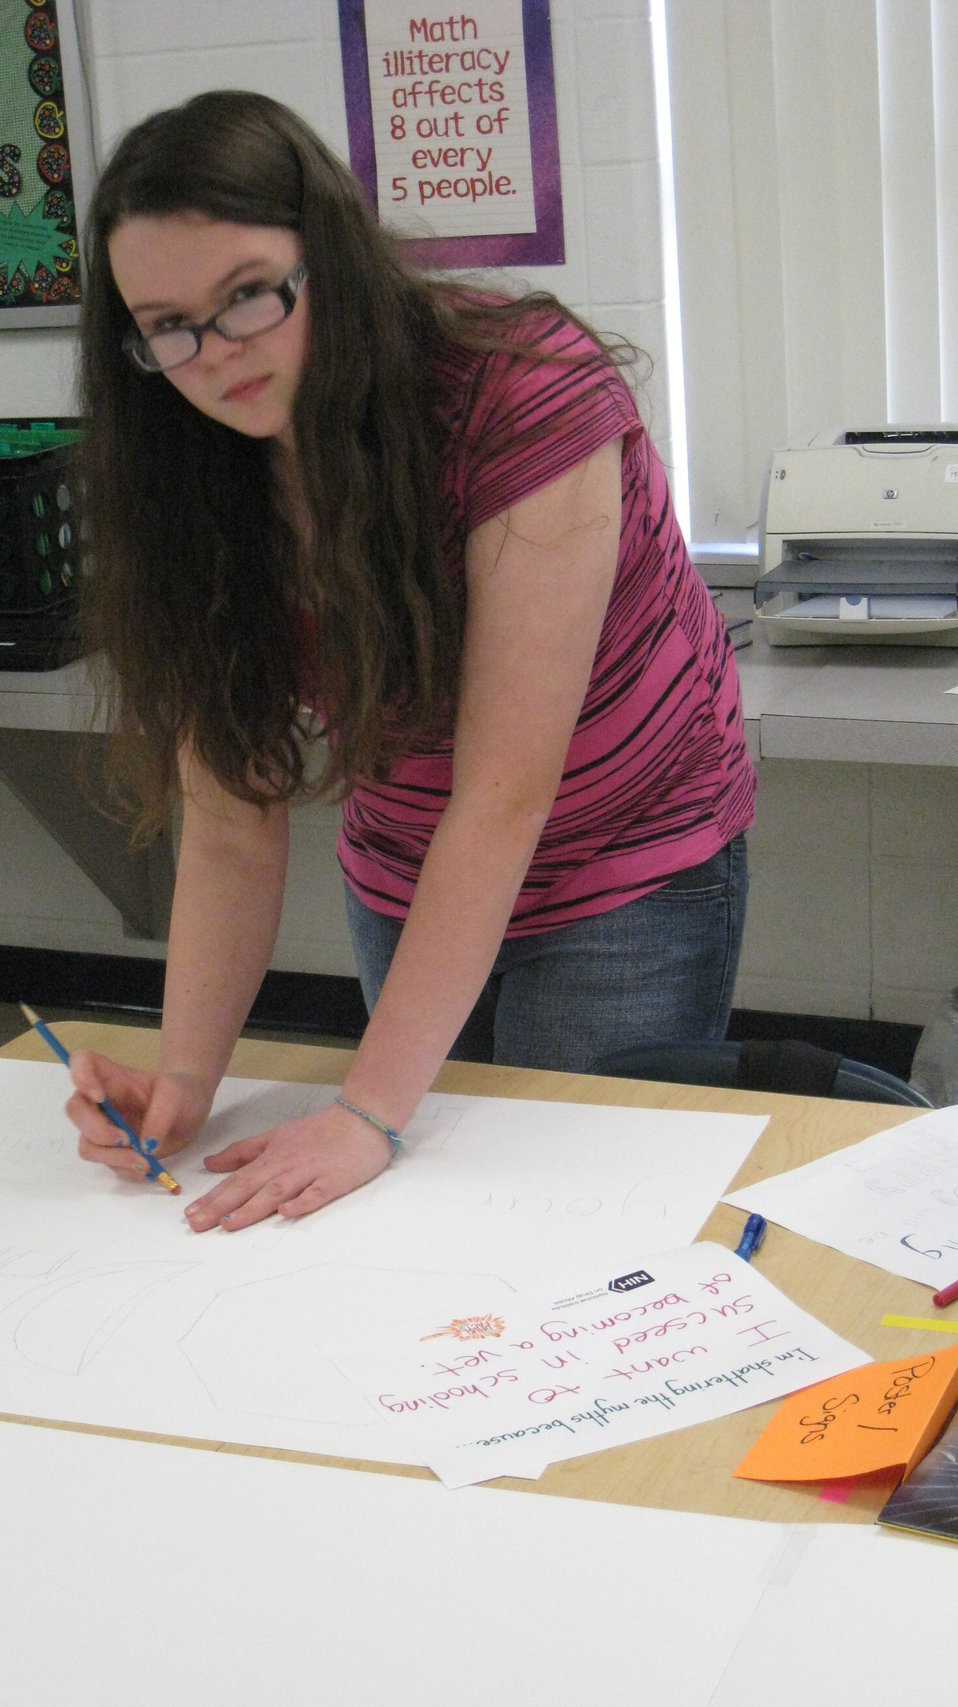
I'm Shattering the Myths Because...

Teenagers from the Van Buren County SAFE Coalition's, Youth Leadership Council (YLC) in Keosauqua, Iowa participate in various events during National Drug Facts Week, 2014.